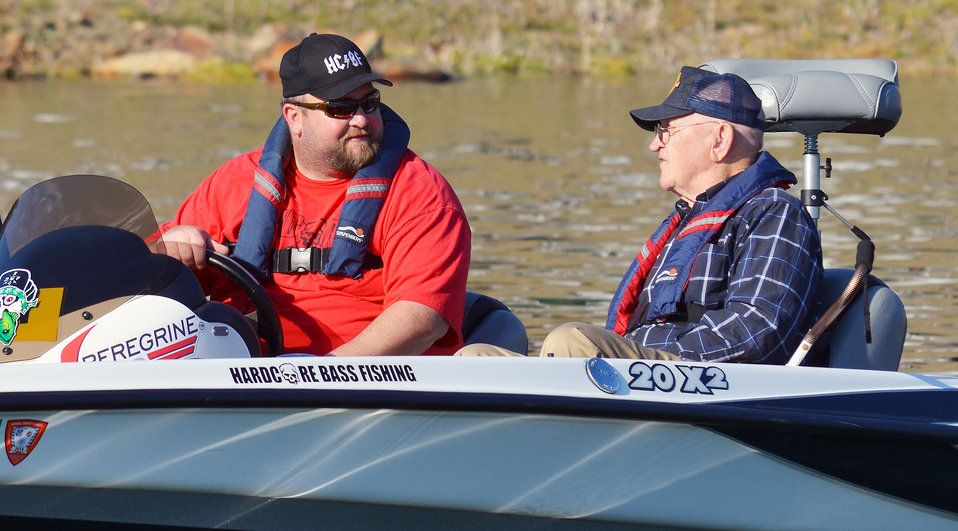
Take a Warrior Fishing 2014 at Pine Flat Lake

Pine Flat Lake, the U.S. Army Corps of Engineers Sacramento District park near Piedra, Calif., hosted Take a Warrior Fishing on May 3, 2014. The recreational event sponsored by Central Valley Veterans and their corporate donors, plus bright sunshine and good fishing, attracted 68 veterans and their families. A team of over 100 volunteers made sure veterans and their families enjoyed a day of fishing, fun and food. Photo cropped for emphasis.